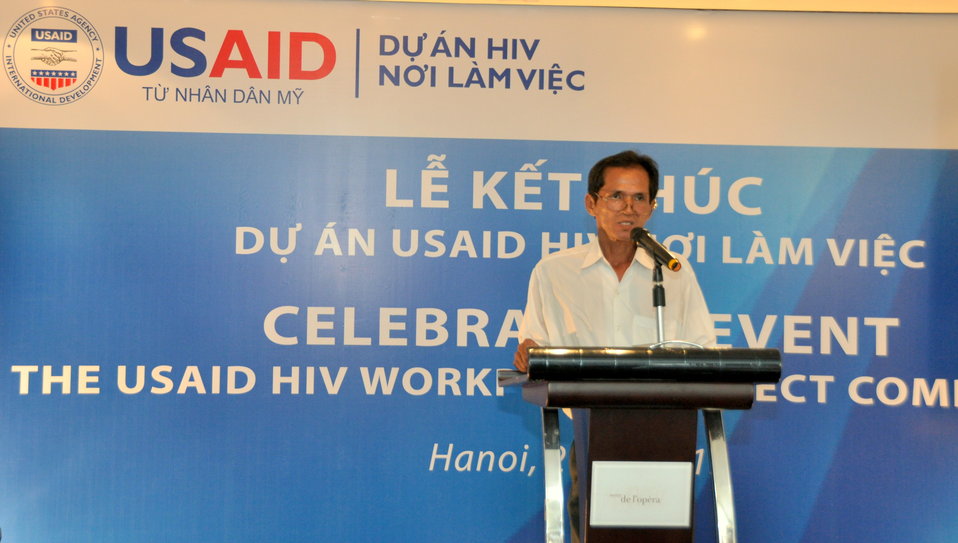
A beneficiary of USAID HIV Workplace Project, who lives in Ho Chi Minh City, tells his story at the event.

Hanoi, June 20, 2013.